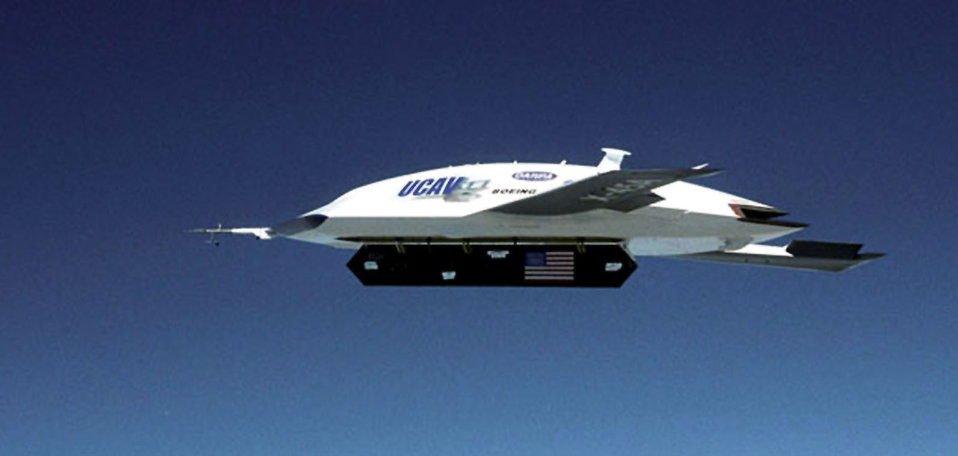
X-45A successfully releases inert weapon

EDWARDS AIR FORCE BASE, Calif. -- The Joint-Unmanned Combat Air System X-45A successfully completed its first weapons release from the unmanned aircraft's internal bay here March 20.